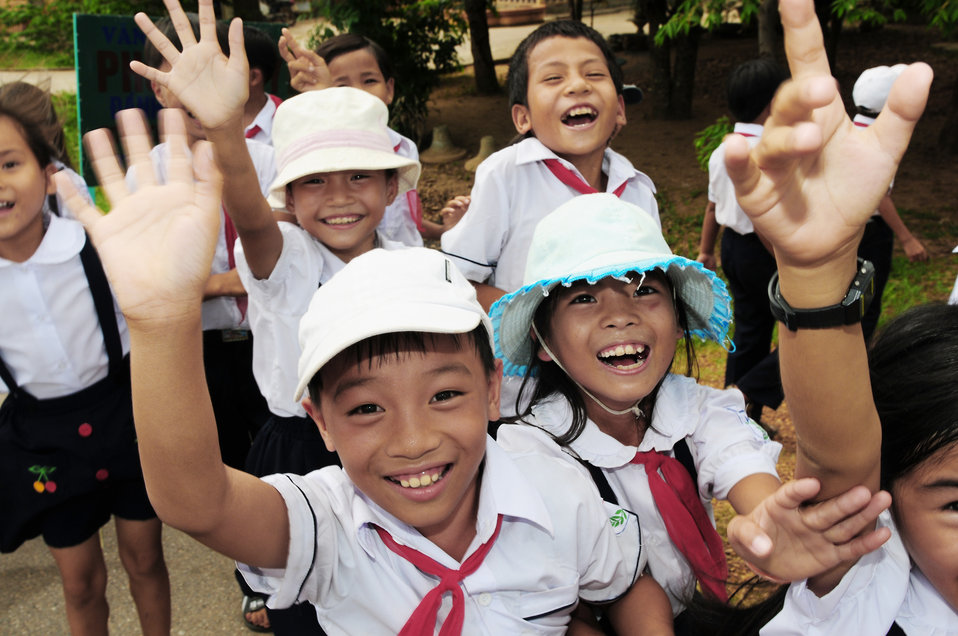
Thousands helped as Pacific Angel concludes

Vietnamese children wave goodbye to Airmen preparing to return to the United States Sept. 22, 2009, after participating in Operation Pacific Angel 2009 in Quang Tri Province, Vietnam. Airmen were in Vietnam Sept. 15 to 24 to provide humanitarian assistance in cooperation with local authorities to area residents. Pacific Angel is a Pacific Air Forces operation led by 13th Air Force at Hickam Air Force Base, Hawaii.